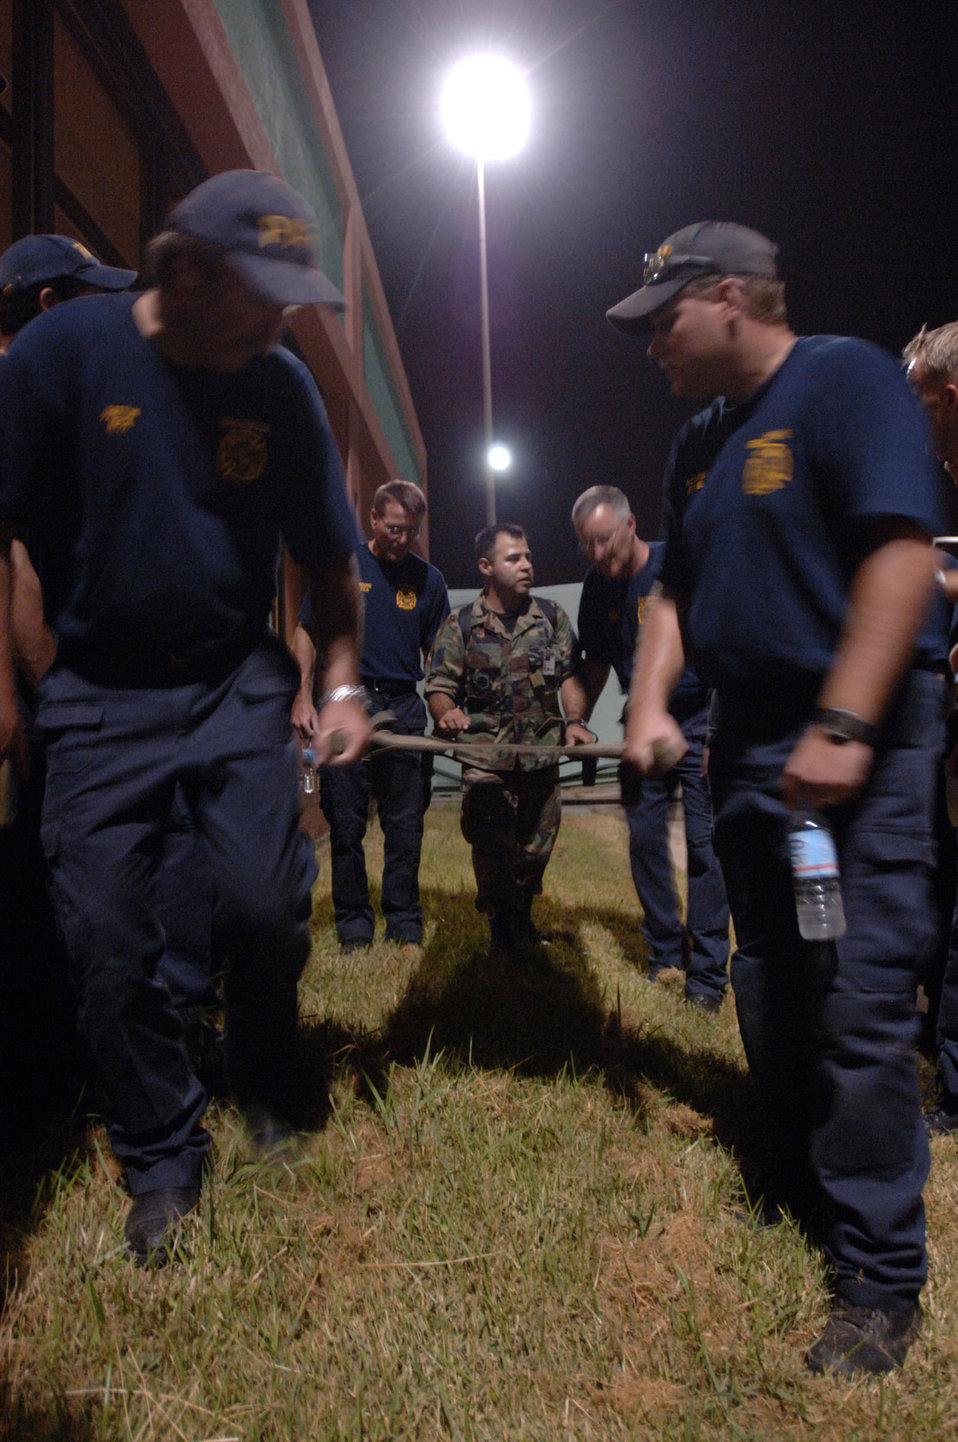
Airlifted to safety

BEAUMONT, Texas -- Tech. Sgt. Carlos Israel Estrada instructs firemen from here and Port Arthur, Texas, in the setup and use of a litter Sept. 22. Local emergency officials worked with Airmen from the 433rd Aeromedical Evacuation Squadron at Lackland Air Force Base, Texas, and the 183rd AES from the Mississippi Air National Guard on Sept. 22 to evacuate people before the arrival of Hurricane Rita.